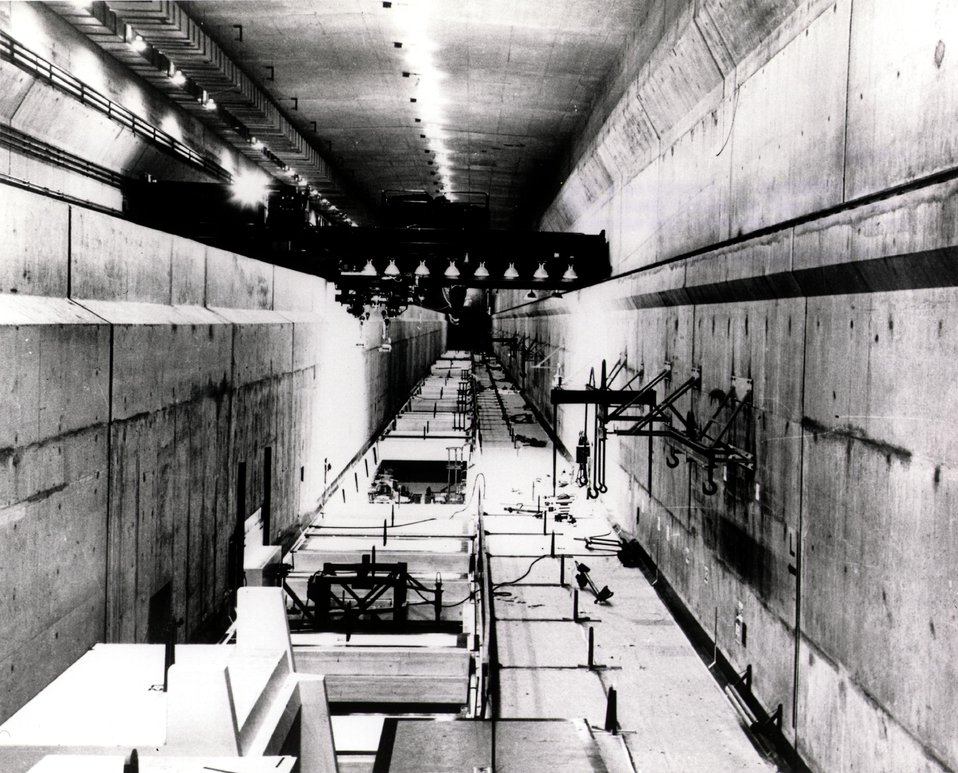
Interior of a canyon in separations unit at Hanford Plant, Washington, where plutonium is separated from unused uranium. c.1965.